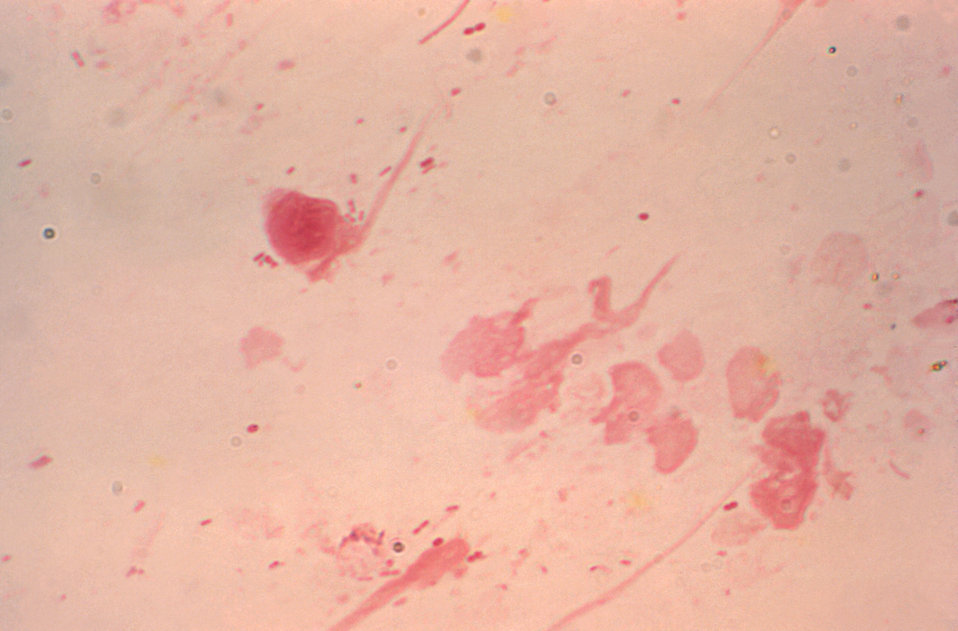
This Gram-stained photomicrograph of a urethral scraping specimen, which had been taken from a symptomatic male patient, revealed the presence of only a few extracellular, diplococcal Neisseria gonorrhoeae bacteria, and no polymorphoneuclear leukocytes (PMNs). This patient had yet to begin any antimicrobial treatment.